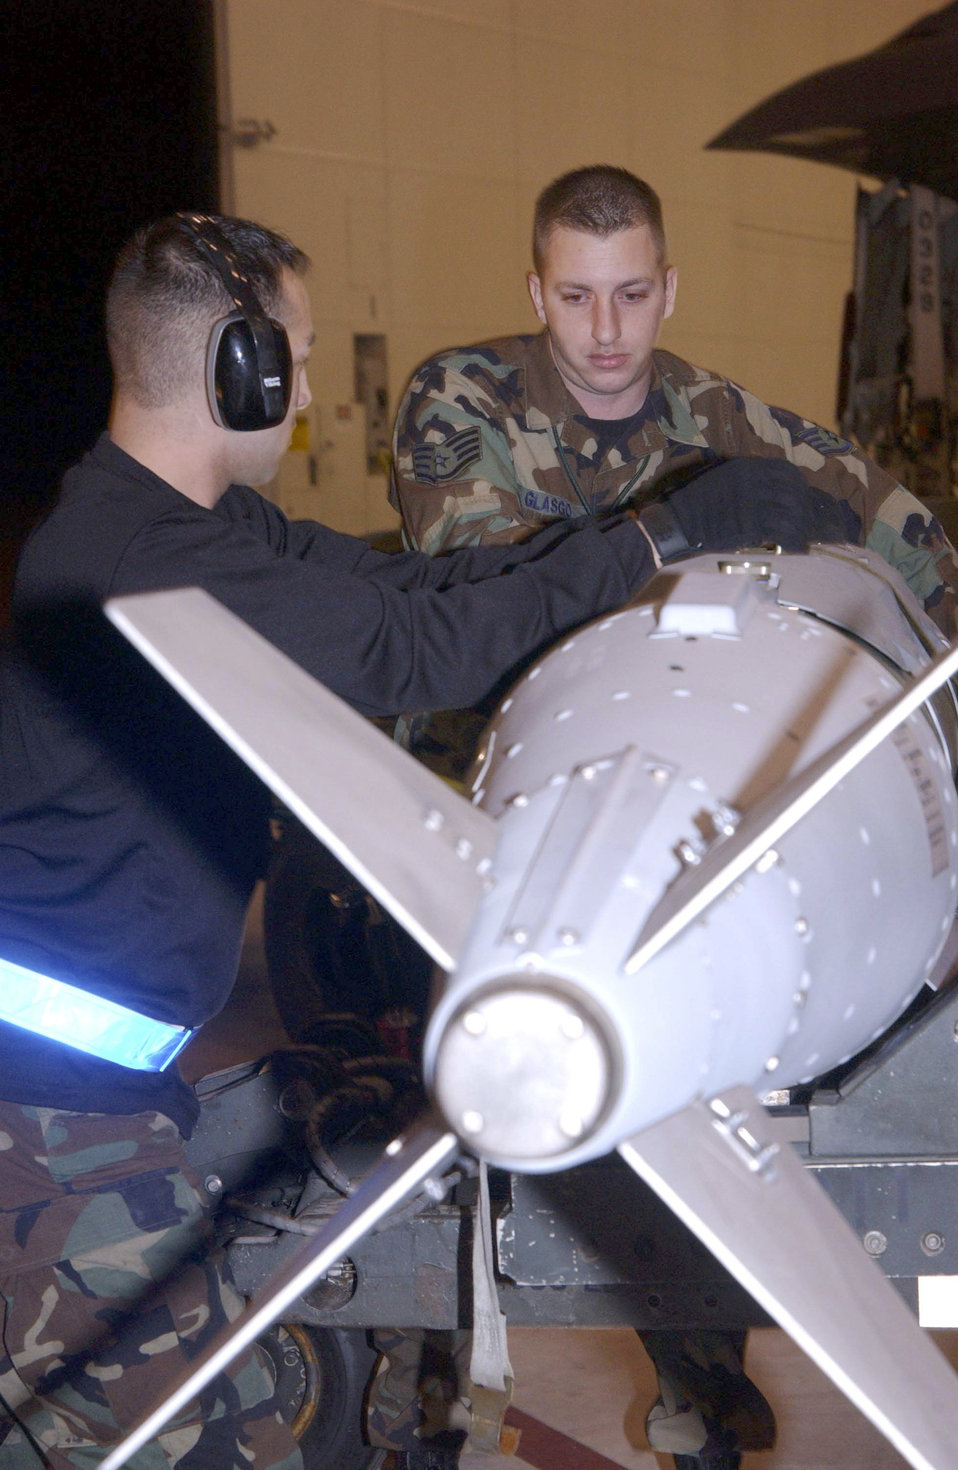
Spirit Force 04-06

WHITEMAN AIR FORCE BASE, Mo. -- Airman 1st Class Josh Rodriguez and Staff Sgt. Clinton Glasgo prepare a Guided Bomb Unit-31 to be loaded onto a B-2 Spirit bomber during exercise Spirit Force 04-06 here March 7. Sergeant Glasgo and Airman Rodriguez are both weapons loaders with the 509th Maintenance Group. Exercise Spirit Force is a conventional operational readiness exercise that tests a unit's capability to deploy to a hostile environment and perform day-to-day mission requirements.